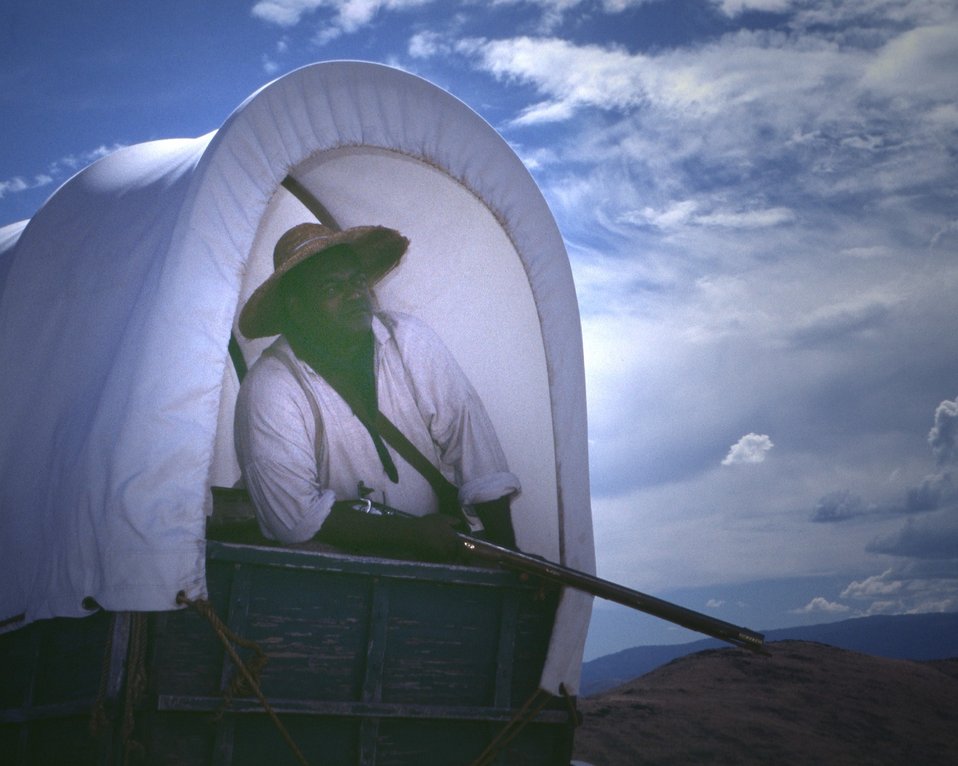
Dylan Prichertt portrays a black pioneer in a covered wagon.